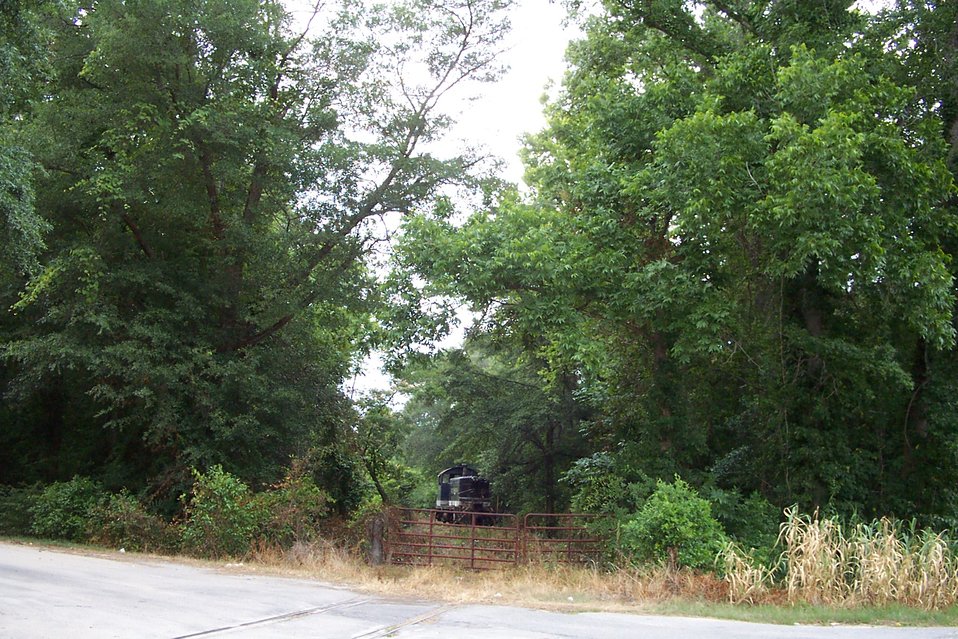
Louisville & Wadley SW-1 locomotive at Wadley, GA